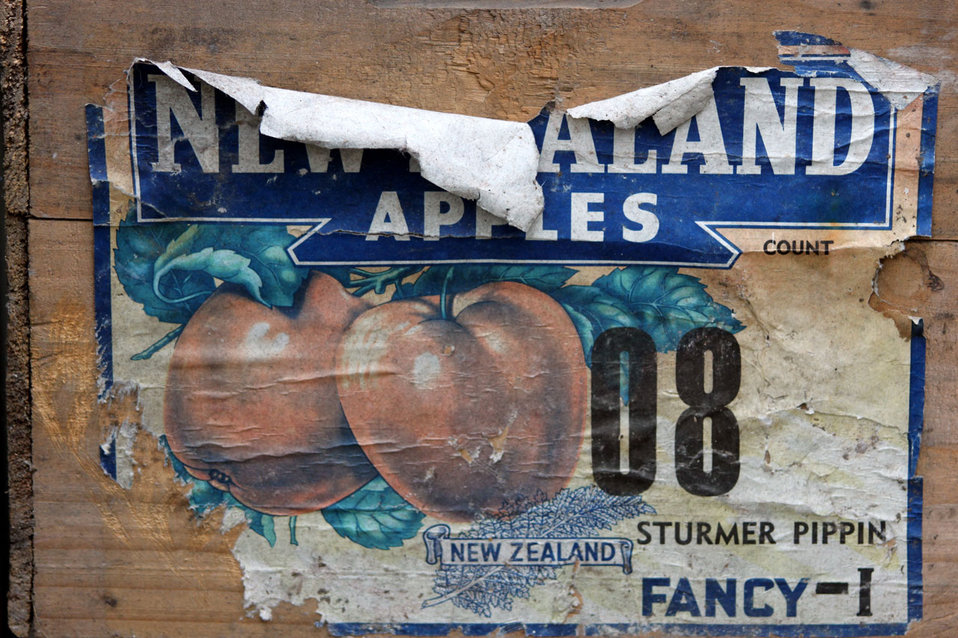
Fading label

Fading apple box label.